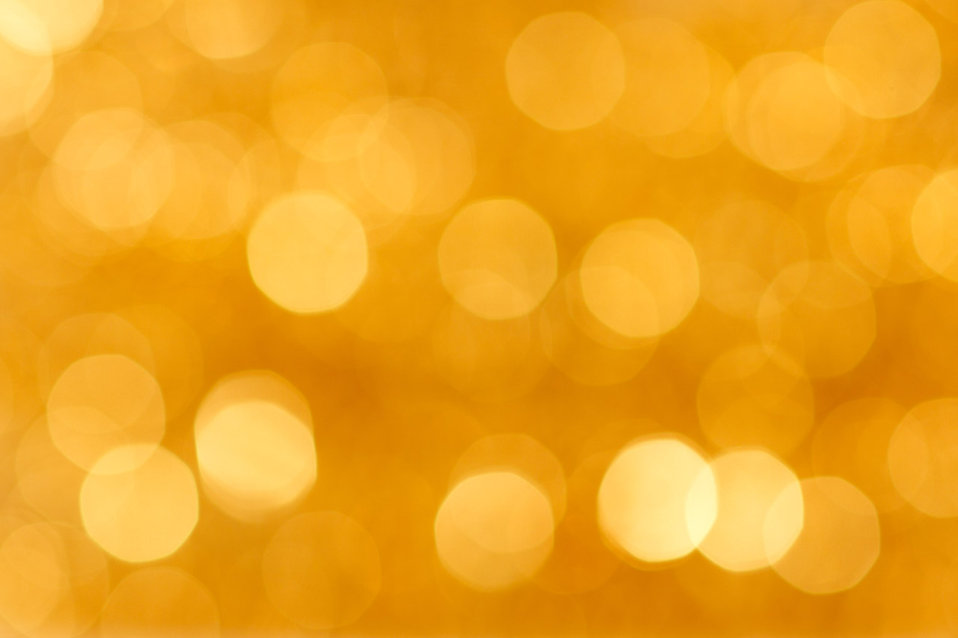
Blurred golden background.